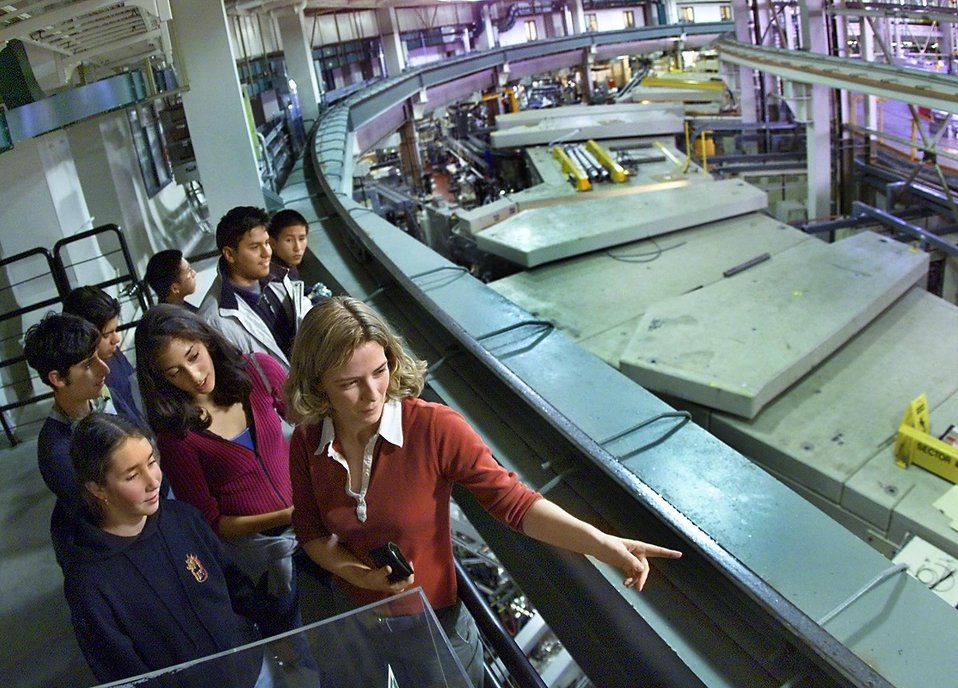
A HIGH SCHOOL SCIENCE CLUB TOUR OF THE ADVANCED LIGHT SOURCES' INNER RING AND BEAM LINES.

LBNL'S ADVANCED LIGHT SOURCE IS A NATIONAL USER FACILITY THAT GENERATES INTENSE LIGHT FOR SCIENTIFIC AND TECHNOLOGICAL RESEARCH. AS ONE OF THE WORLD'S BRIGHTEST SOURCES OF ULTRAVIOLET AND SOFT X-RAY BEAMS AND THE WORLD'S FIRST THIRD GENERATION SYNCHROTRON LIGHT SOURCE IN ITS ENERGY RANGE, THE ALS MAKES PREVIOUSLY IMPOSSIBLE STUDIES POSSIBLE. THE FACILITY WELCOMES RESEARCHERS FROM UNIVERSITIES, INDUSTRIES AND GOVERNMENT LABORATORIES WORLD WIDE.